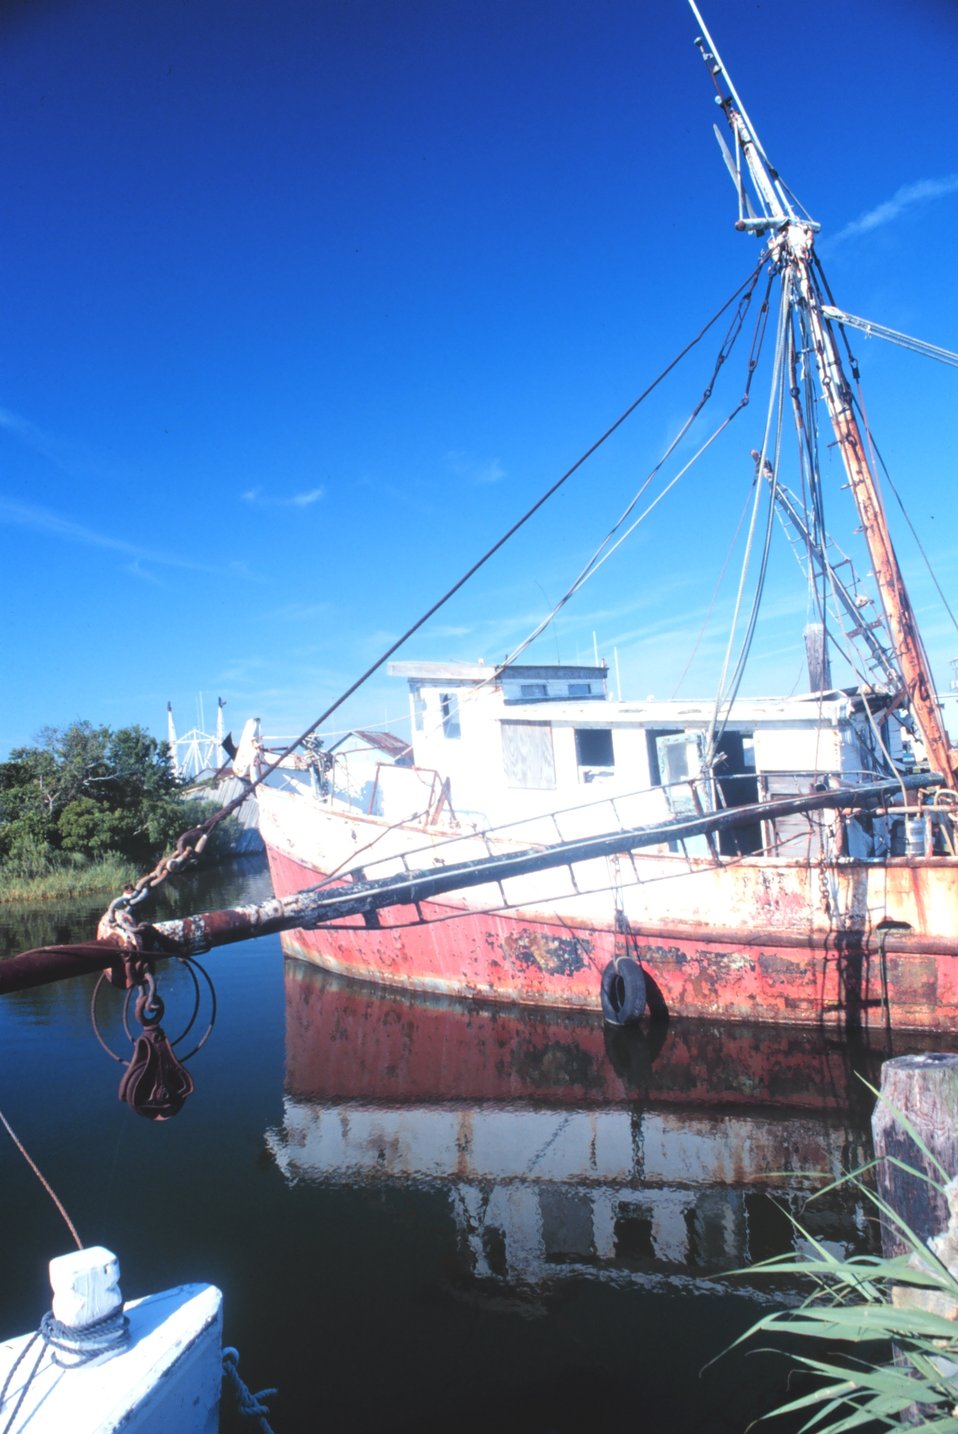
This boat has seen better days